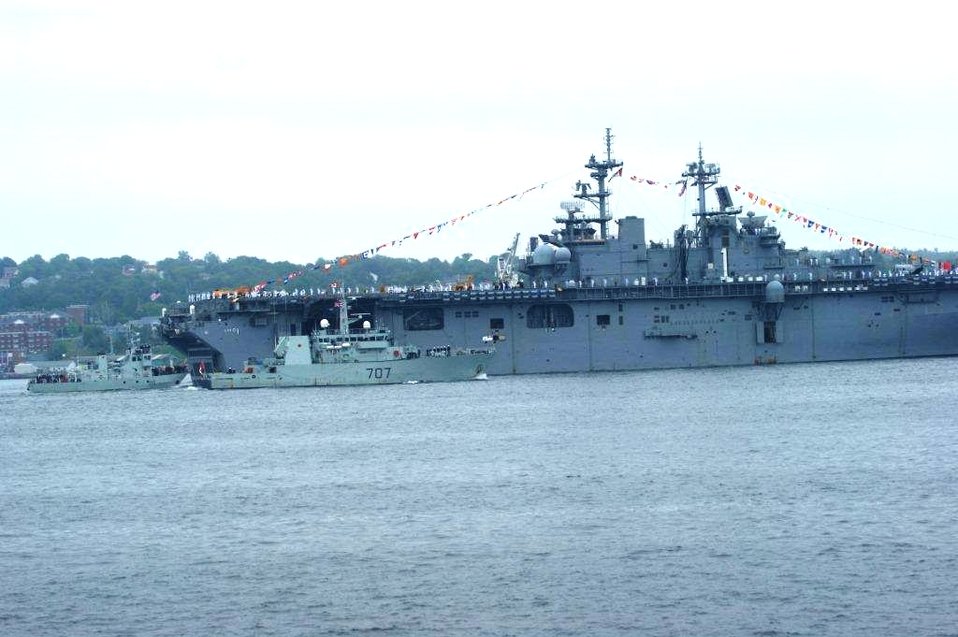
HMCS Goose Bay (MM 707) Celebrates the Canadian Navy’s 100th Anniversary and Prepares To Participate in Queen Elizabeth’s Fleet Review

The HMCS Goose Bay (MM 707) celebrates the Canadian Navy’s 100th Anniversary and prepares to participate in Queen Elizabeth’s Fleet review in Halifax, Nova Scotia, Canada, on June 30, 2010.